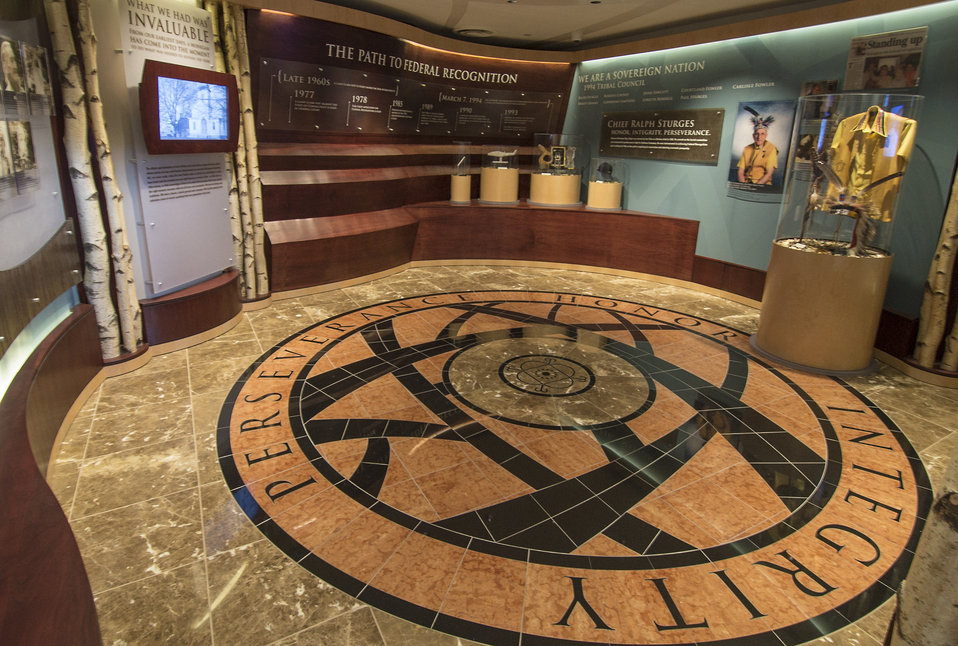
The Mohegan Tribe’s motto of “Perseverance, Honor, and Integrity” is created in stone in the floor of the new library and archives space in the Mohegan Tribe Community Center and Government Building in Uncasville, CT Nov. 18, 2013. This motto was frequently cited by the late Mohegan Chief Ralph Sturges (Mohegan name, G’tinemong 1918-2007). A U.S. Department of Agriculture (USDA) Rural Development (RD) Community Facility Loan was provided to the Mohegan Tribe for the construction of the Mohegan Tribe Community Center and Government Building in Uncasville, CT. USDA’s RD Community Facilities Programs makes and guarantees loans to develop essential community facilities in rural areas and towns of up to 20,000 in population. Loans and guarantees are available to public entities such as municipalities, counties, parishes, boroughs, and special-purpose districts, as well as to non-profit corporations and tribal governments. The 160,000 square foot building Center hosts an exhibit celebrating federal recognition, history of Mohegan Chiefs, a new Library and Archives space, new Arts and Crafts room, a new gymnasium, and a new community room to enjoy food and family. The Center will continue the Tribe’s plan for growth and meeting the needs of its members.